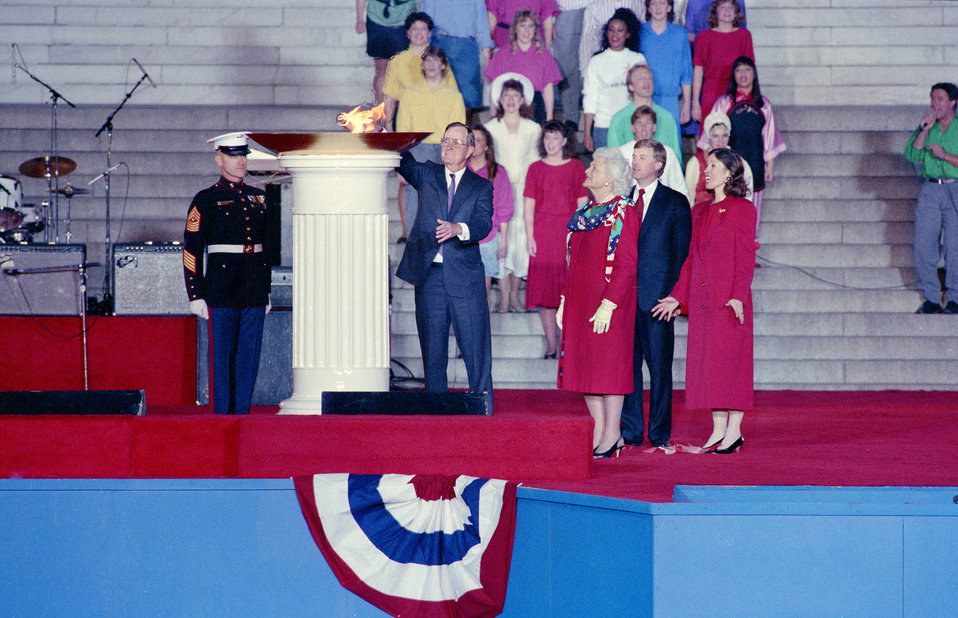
Description: 89-2826.23, 1989 Presidential Inaugration, George H. W. Bush, Opening Ceremonies, at Lincoln Memorial, from 35mm color negative. Creator/Photographer: Jeff Tinsley Medium: C-type print Culture: American Date: 1989 Persistent URL: [1] Repository: Smithsonian Institution Archives/Smithsonian Photographic Services Accession number: 89-2826.23